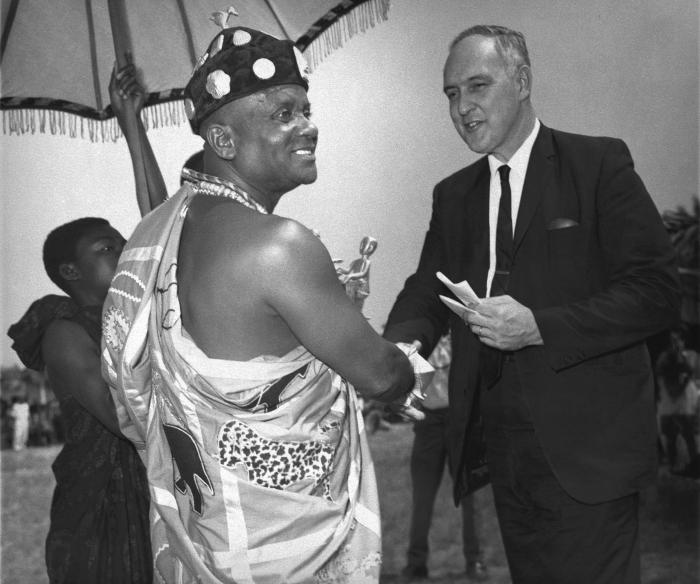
This 1968 image depicts Ghana's Regional Chieftain Mampong Akwapim, Timi of Ede, with Surgeon Gen. William Stewart.